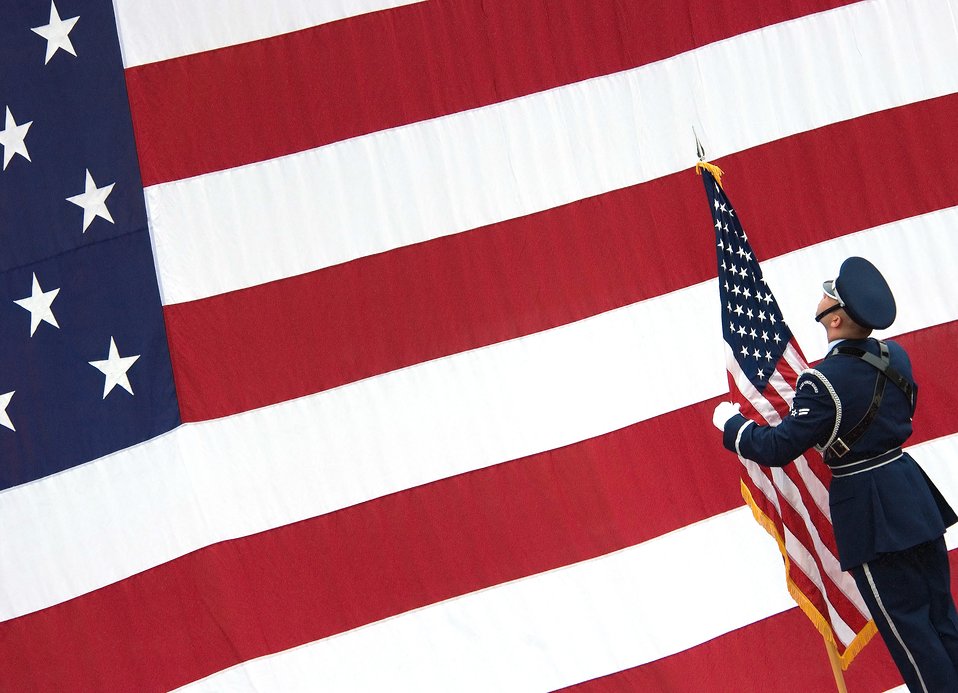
Today is Flag Day

Airman 1st Class Nikolaos Pitas posts the American flag during a change of command ceremony at Dover Air Force Base, Del., on Friday, June 2. He is assigned to the 436th Maintenance Squadron.